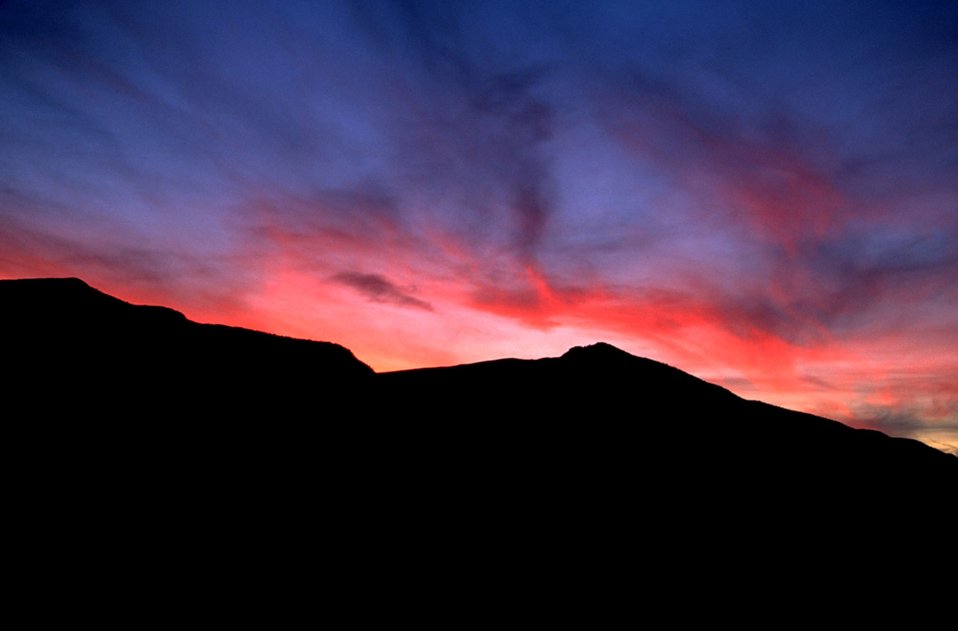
Beautiful sunset with silhouette of mountains